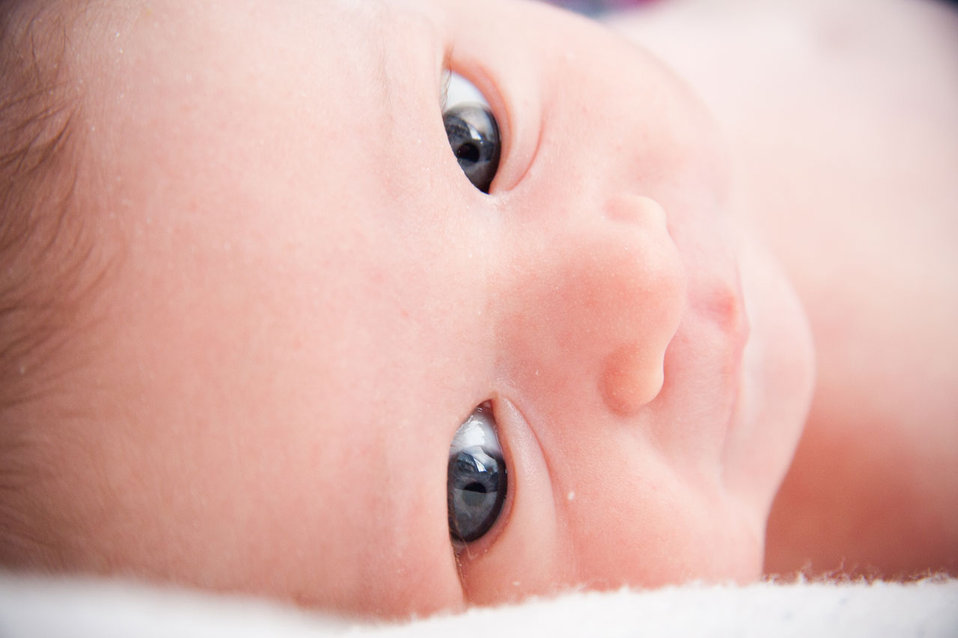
Baby boy macro.